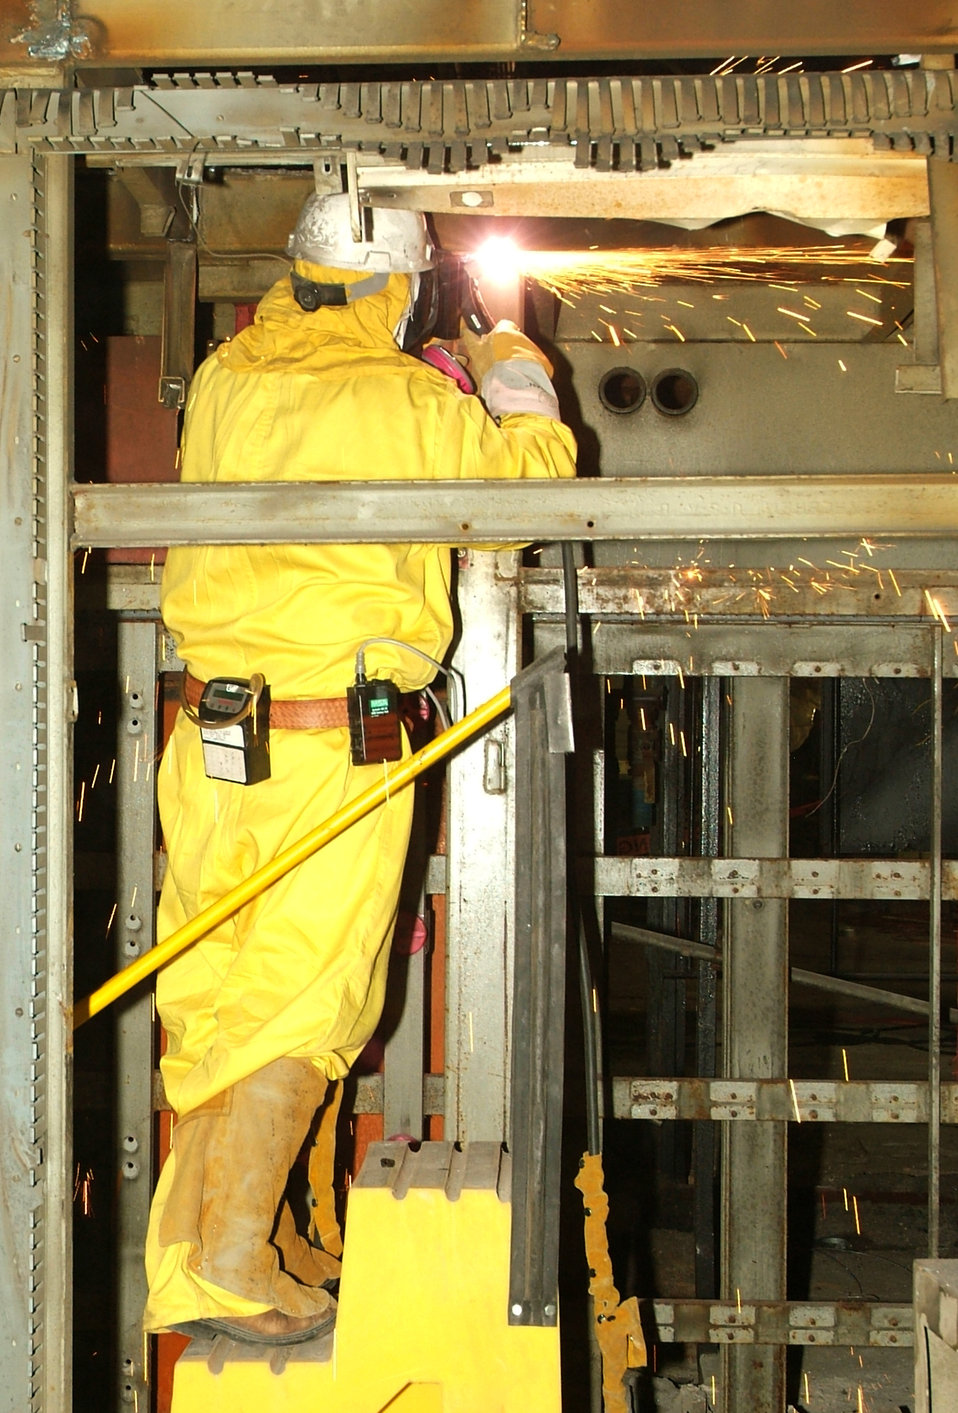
Smelter Demolition - Paducah

Recovery Act workers cut up equipment in 2010 in the East End Smelter at DOE’s Paducah Site.